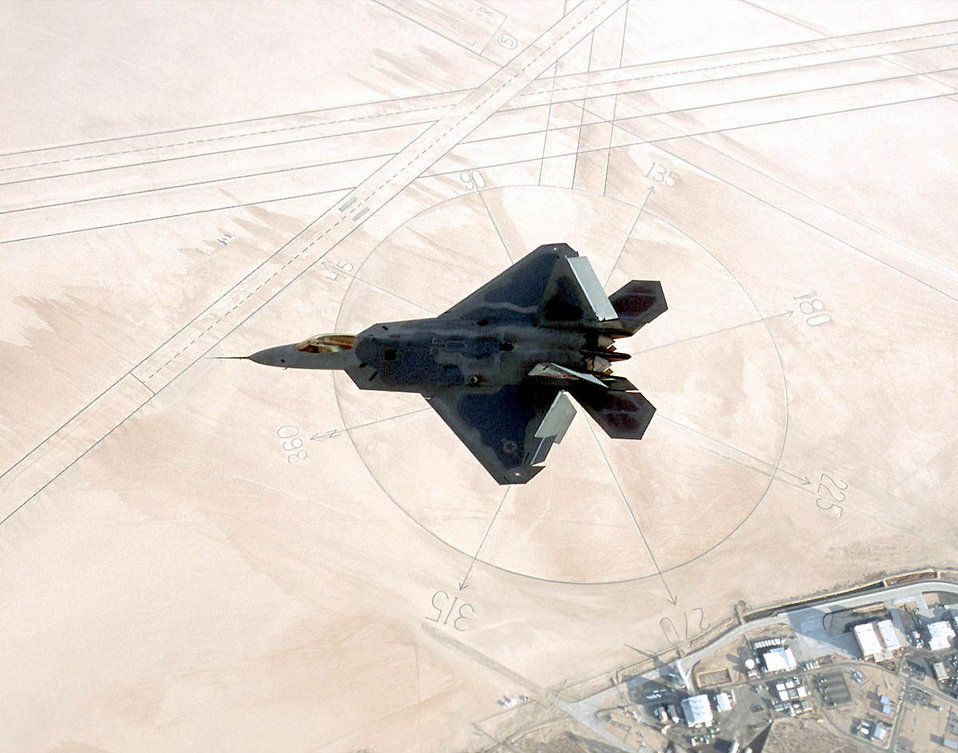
Compass Rose

EDWARDS AIR FORCE BASE, Calif. -- F/A-22 Raptor 4001 flies over the Compass Rose at the Rodgers Dry Lakebed here. Advanced avionics technologies will allow F/A-22 sensors to gather, integrate and display essential data in the most useful format for future pilots.